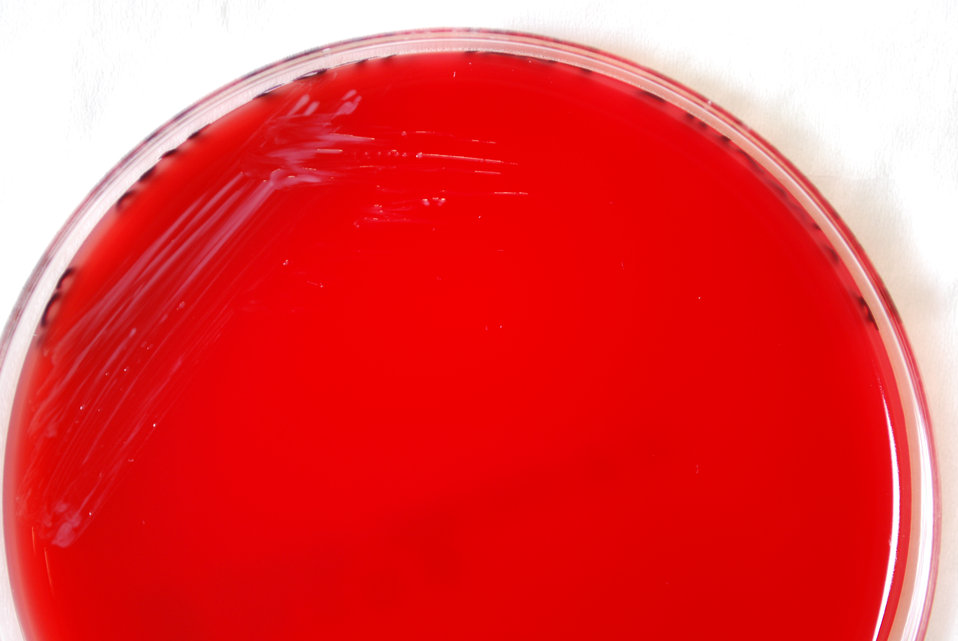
A closer view of PHIL 12203, this photograph depicts the colonial morphology displayed by Gram-negative Brucella abortus bacteria, which was grown on a medium of sheep's blood agar (SBA), for a 24 hour time period, at a temperature of 37�C. This Petri dish and its contents were incubated in a CO2 incubator.How is brucellosis transmitted to humans, and who is likely to become infected?